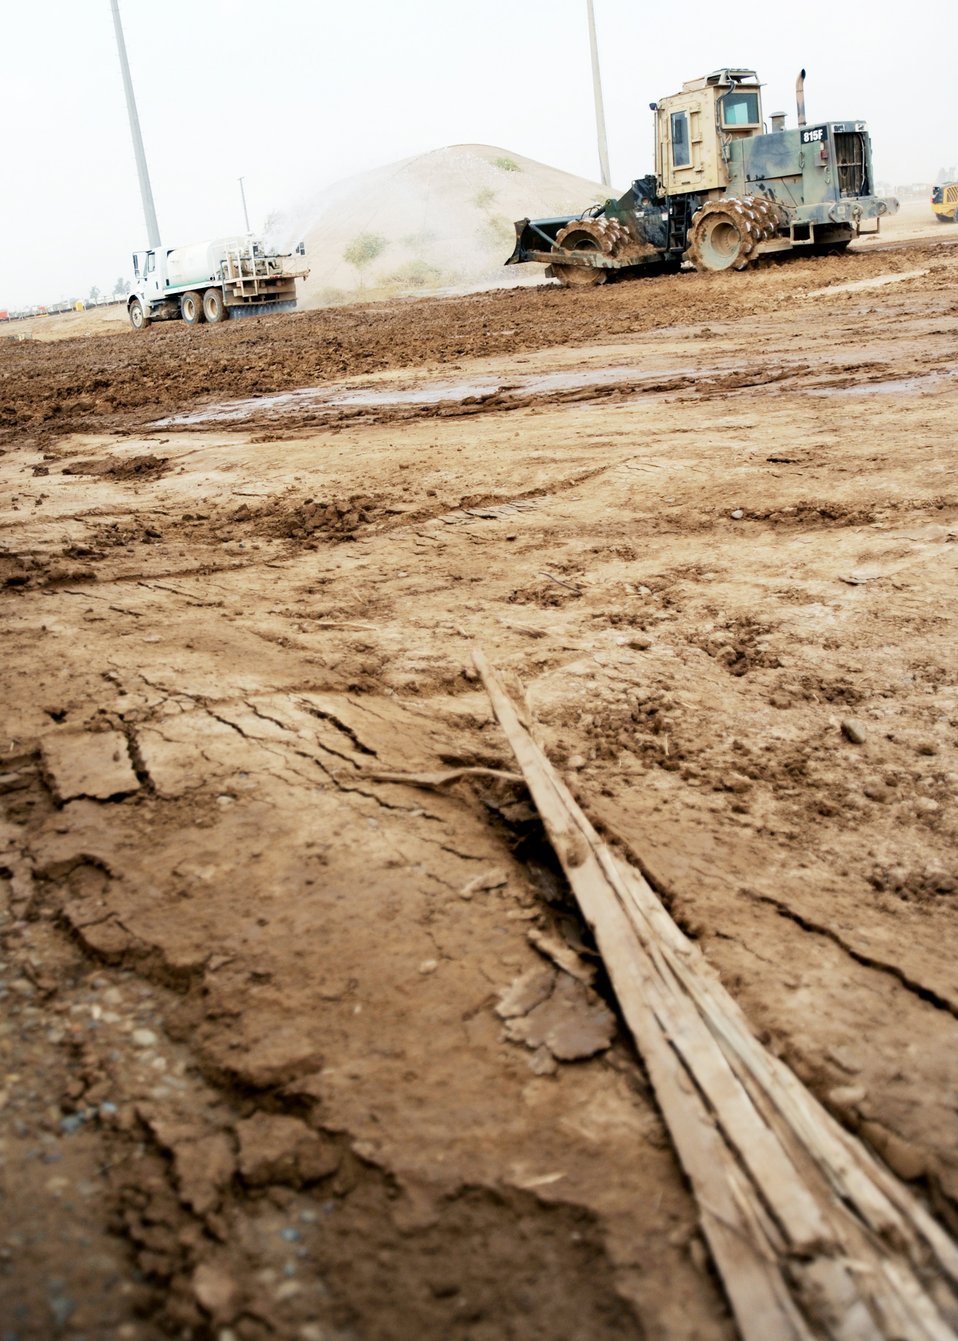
Airmen build up reconstruction yard for drawdown

Airmen use a 1,500 gallon water truck to soften the earth for a sheep's foot roller, as it compacts the soil for a new container repair yard Nov. 2, 2009, at Joint Base Balad, Iraq. By using containers repaired here instead of purchasing new ones, the projected savings totaled more than $100 million as military assets withdraw from Iraq. The Airmen are from the 732nd Expeditionary Civil Engineer Squadron.